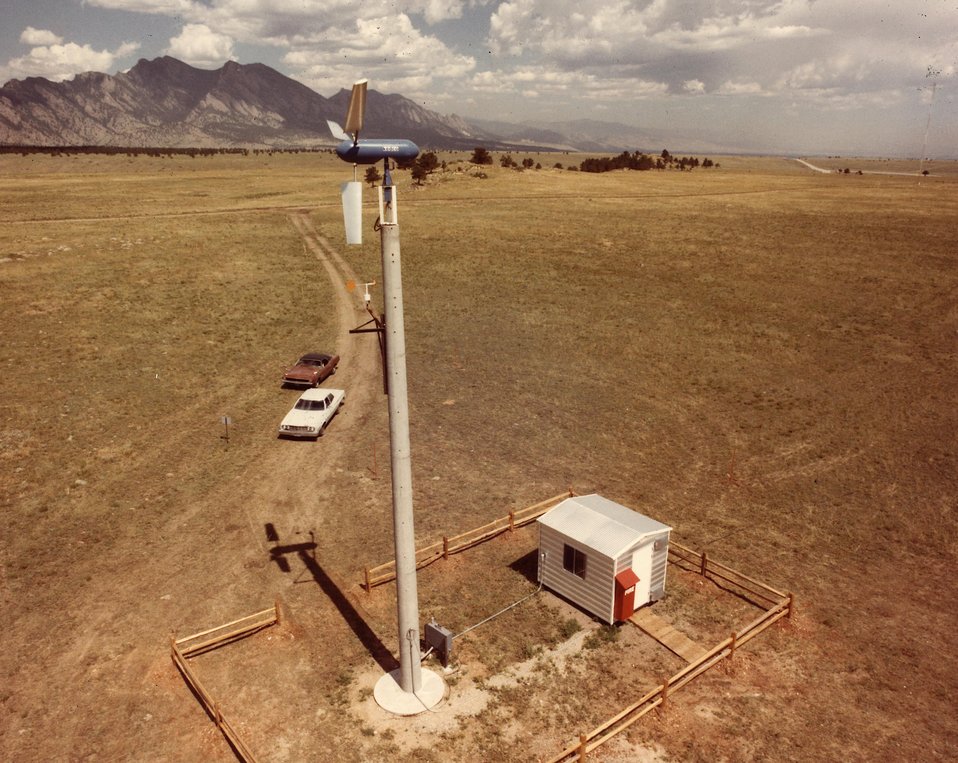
Kedco 12V 1.2KW. c. undated